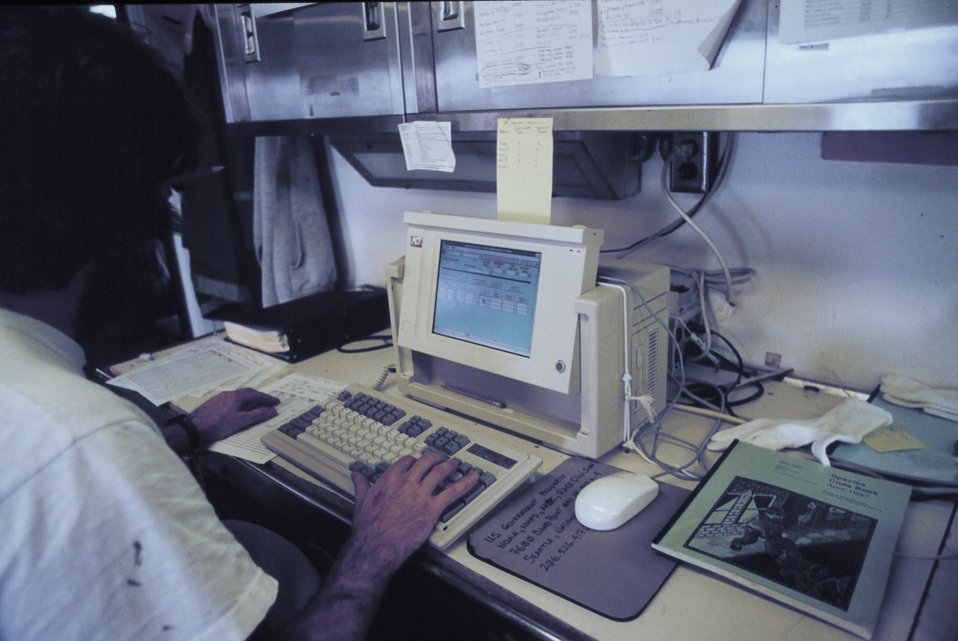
Entering results of fish measurement and weighing in computer.